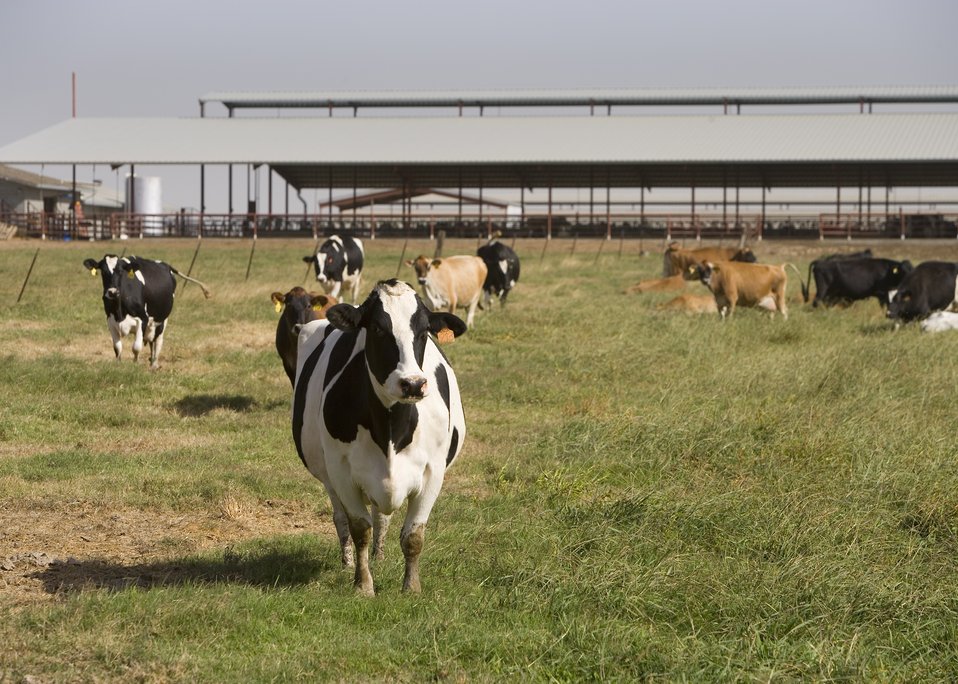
Dairy cow in pasture. California.